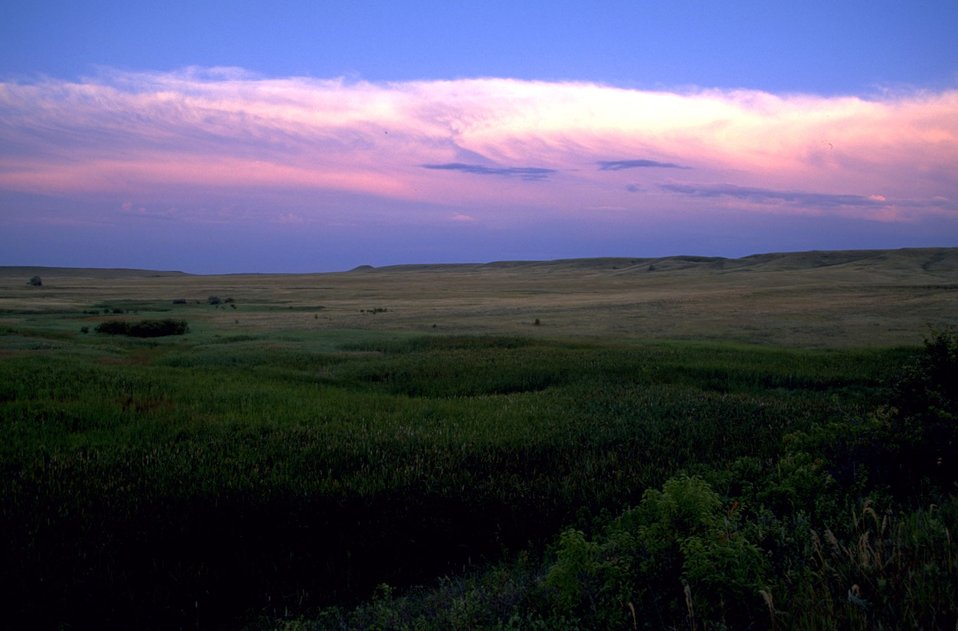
Fort Meade looking north to south across prairie